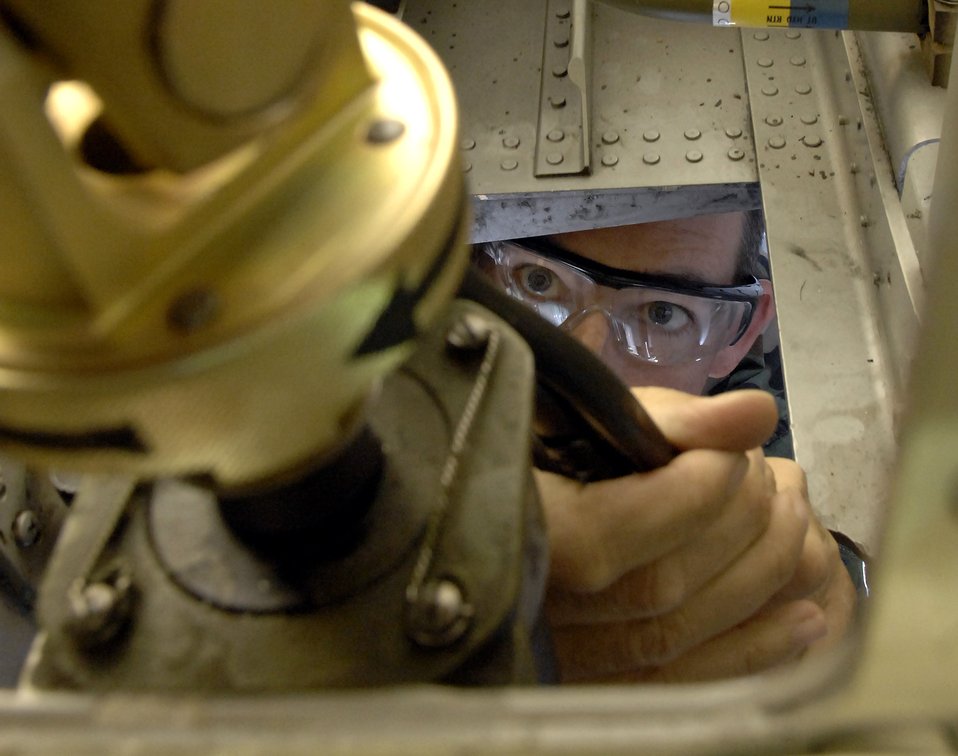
Making things safe

Tech. Sgt. Shawn Taillon installs safety wire on the quick-disconnect for the main landing gear on the C-130 Hercules trainer Nov. 1 at Little Rock Air Force Base, Ark. In an emergency, the crew can drop the landing gear if the manual hand crank is jammed.